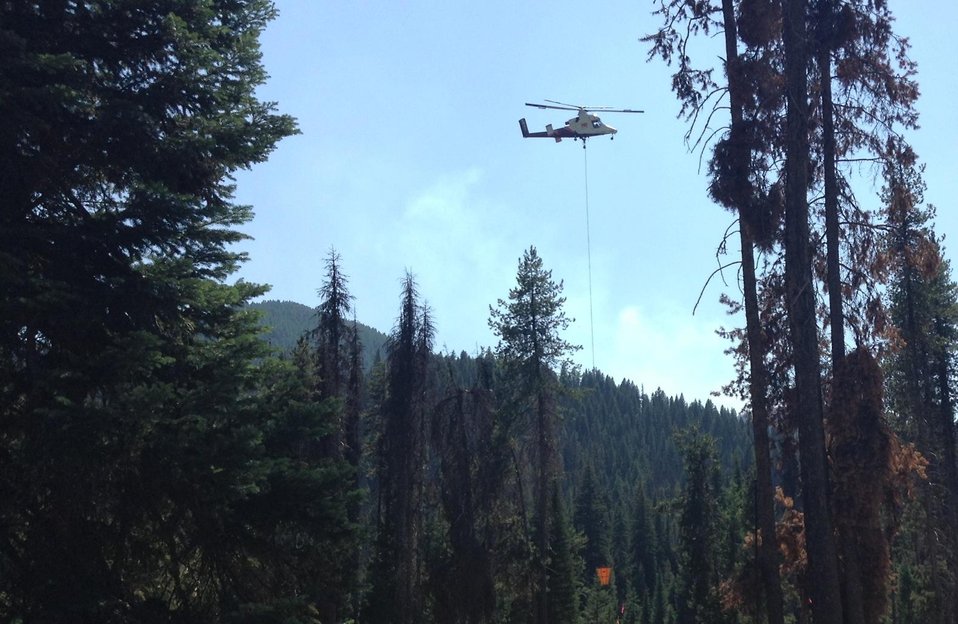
A K-Max Type 1 (heavy Lift) helicopter fills its bucket at the Cayuse Creek Portable Dip Tank at the Gold Pan Fire in the Bitterroot National Forest. The K-Max helicopter is a single seat aircraft that, unlike other helicopters, operates without a tail rotor. The Gold Pan Fire in the Bitterroot National Forest near Conner, MT began by lightning on Jul. 16, 2013 by lighting have consumed approximately 16,330 acres.